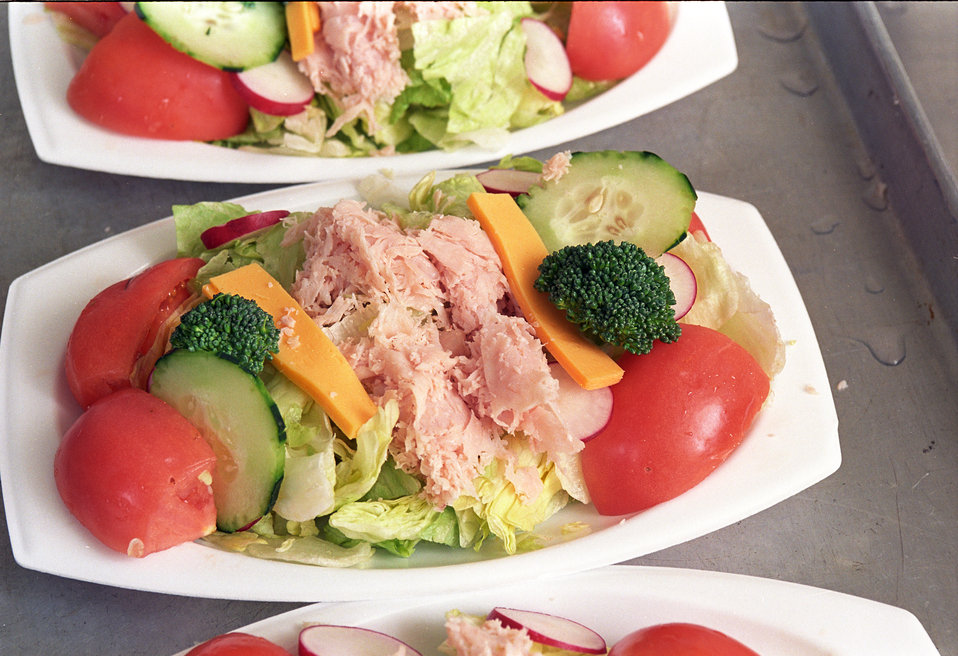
A nutritious lunch is prepared at a school in St. Petersburg, FL on January 15, 2003. The U.S. Department of Agriculture's (USDA) Food and Nutrition Service (FNS) Fresh Fruit and Vegetable Program (FFVP) was introduced to schools in 2003. The FFVP provides all children in participating schools with a variety of free fresh fruits and vegetables throughout the school day. It is an effective and creative way of introducing fresh fruits and vegetables as healthy snack options. The FFVP also encourages schools to develop partnerships at the State and local level for support in implementing and operating the program. The Goal of the FFVP is to create healthier school environments by providing healthier food choices, expand the variety of fruits and vegetables children experience, increase children’s fruit and vegetable consumption, and make a difference in children’s diets to impact their present and future health.